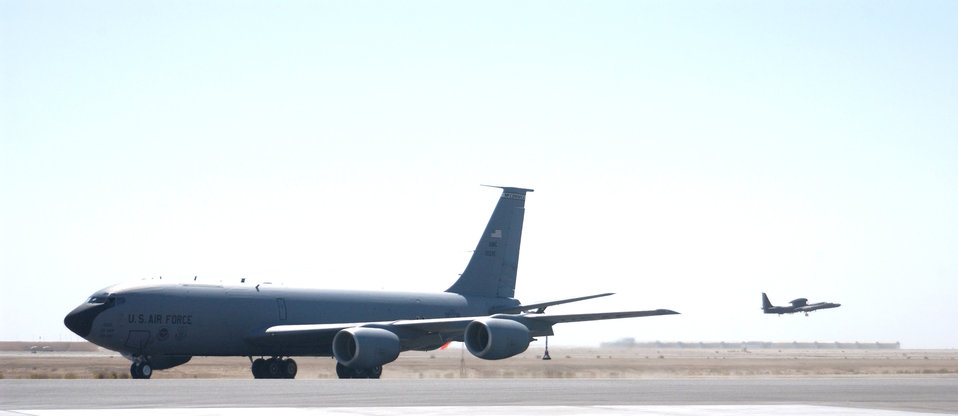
KC-135 launch

A U-2